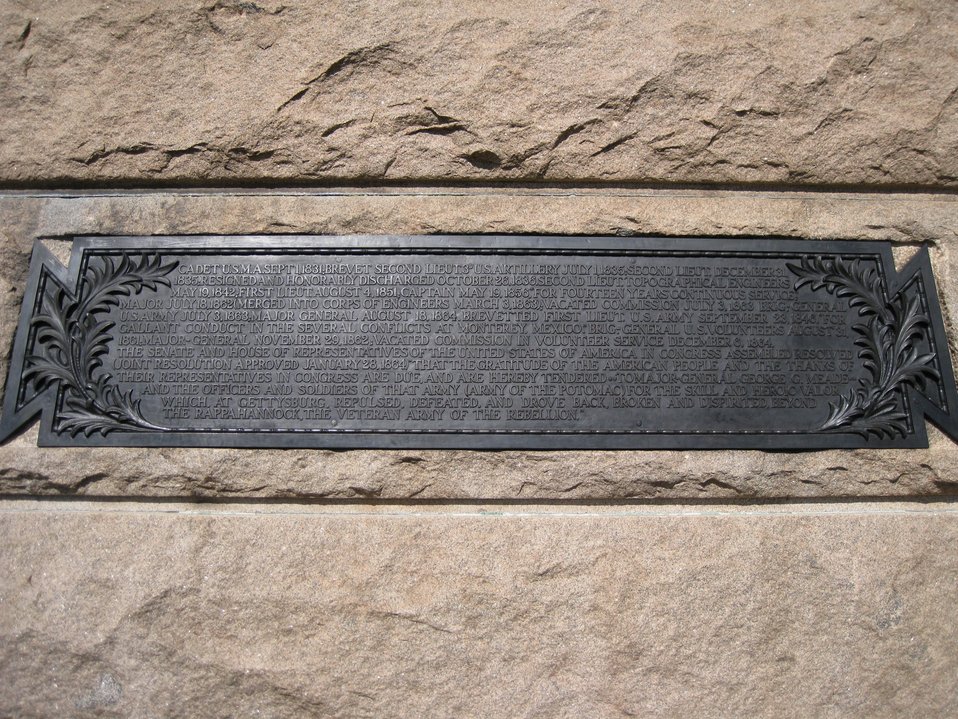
Plaque detailing the career of General George Gordon Meade, the victorious general at Gettysburg. Besides the information on this plaque, Meade had served from 1851 to 1857 on the Lighthouse Board and had charge of building Carysfort Reef Light and Barnegat Light. From 1857 to August 1861, he had charge of the United States Lake Survey, now absorbed into NOAA.